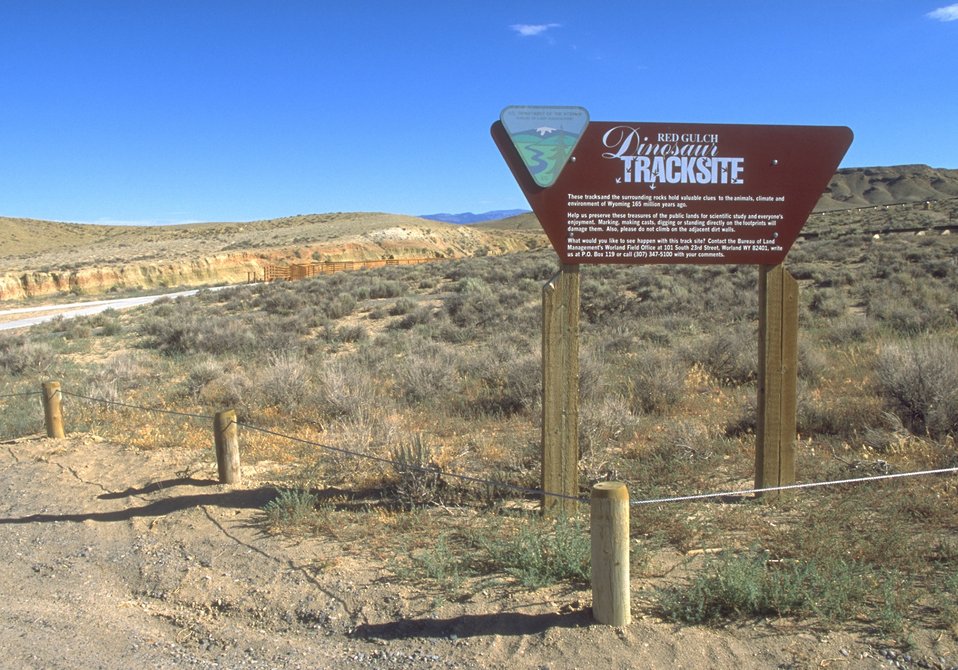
Red Gulch Dinosaur Tracksite, along Red Gulch/Alkali Back Country Byway, Worland Field Office.